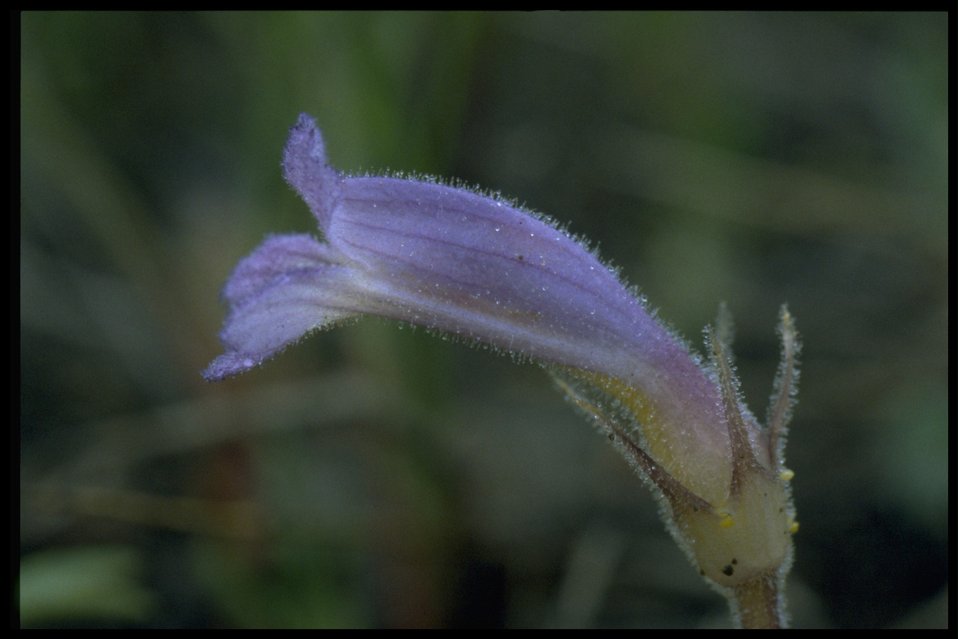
Closeup shot of oneflowered broomrape (Orobanche uniflora).